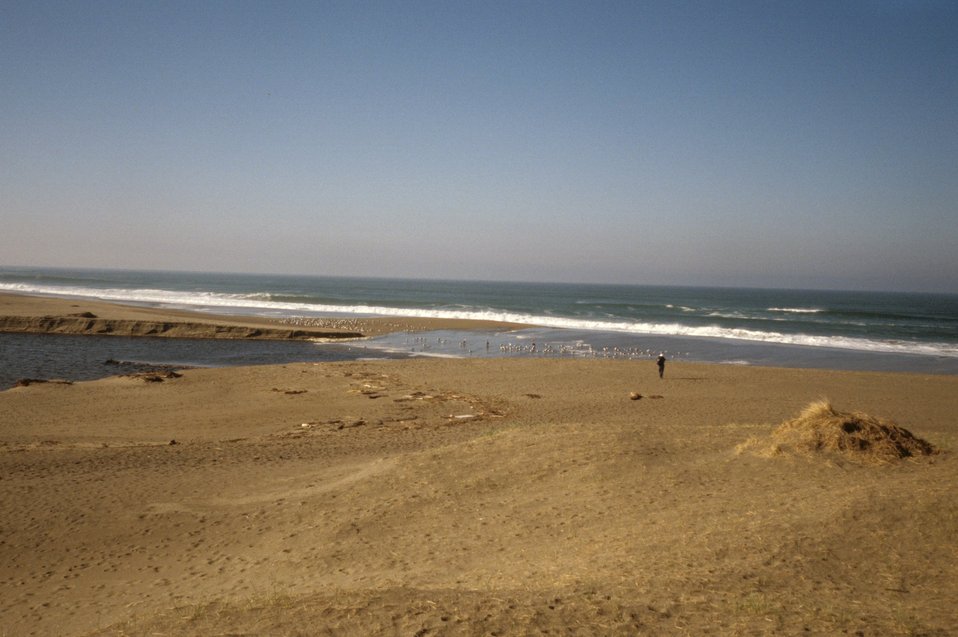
Point Reyes Great Beach